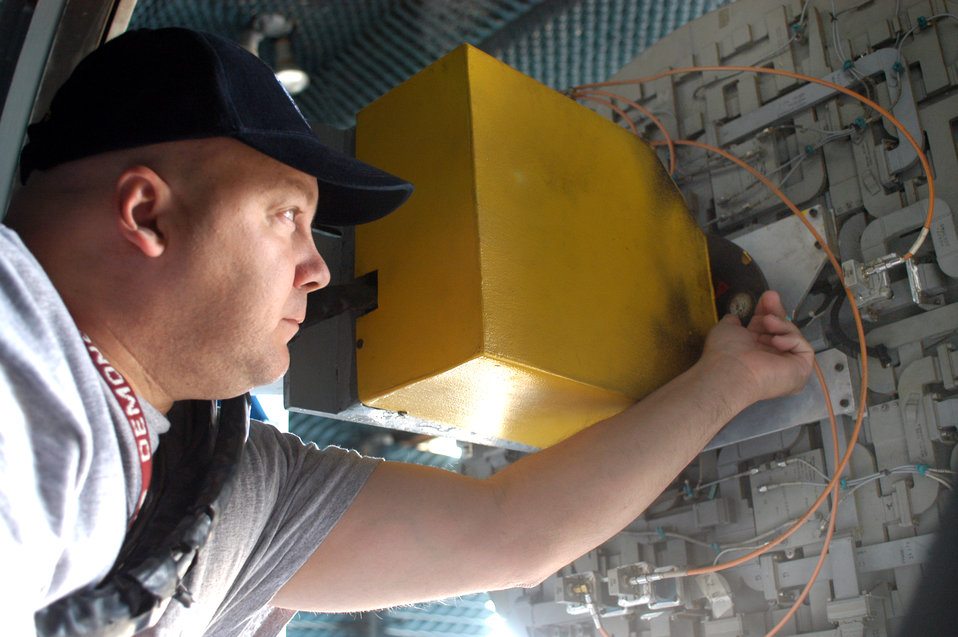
Making waves

ROBINS AIR FORCE BASE, Ga. -- George Long tunes and levels an antenna. Mr. Long is an electronic mechanic here.